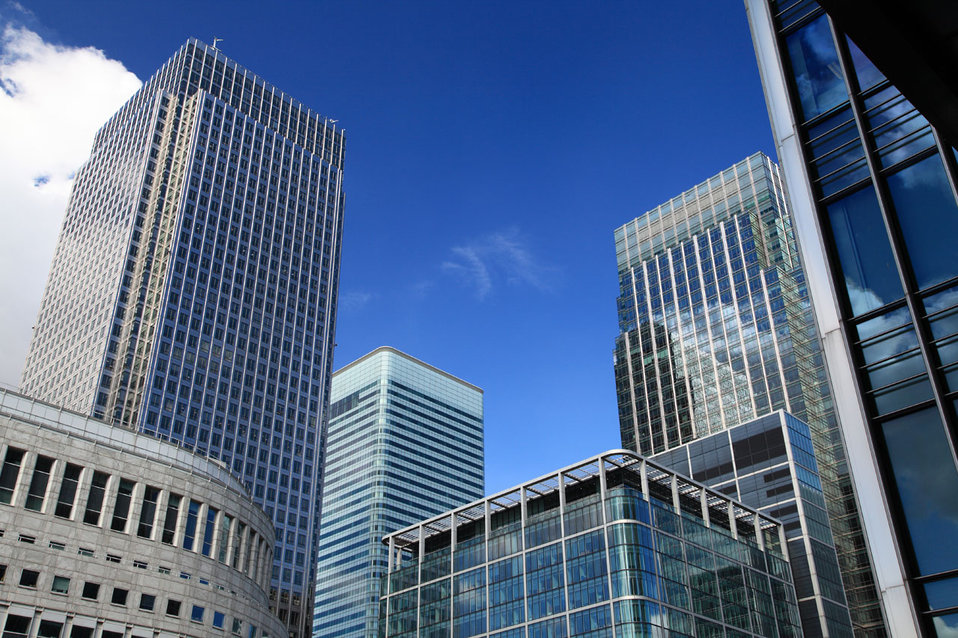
Modern architecture

Modern office buildings against blue sky in london.